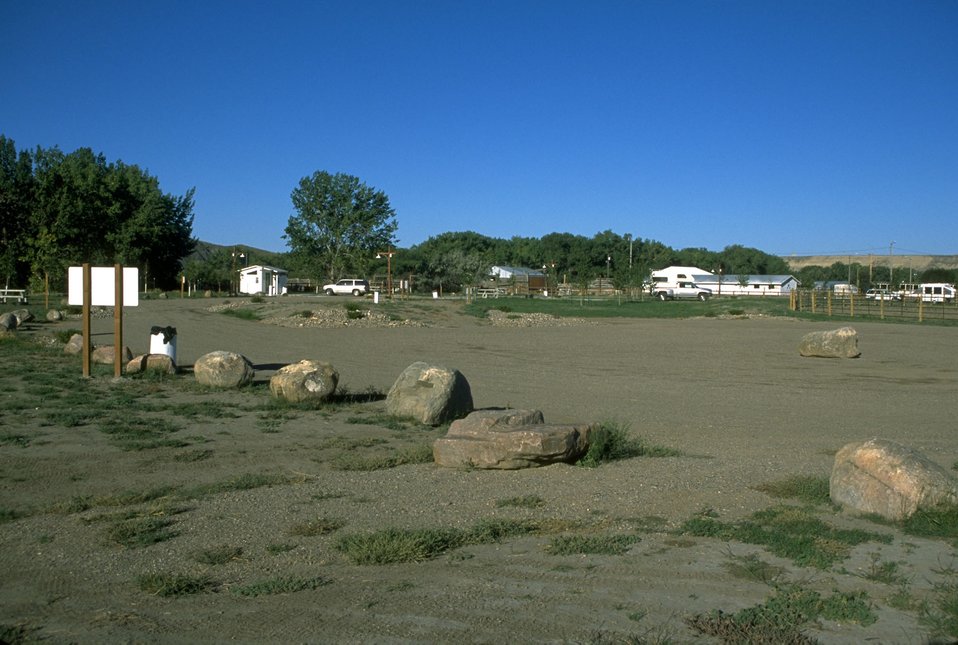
Canoe launch campground at Fort Benton